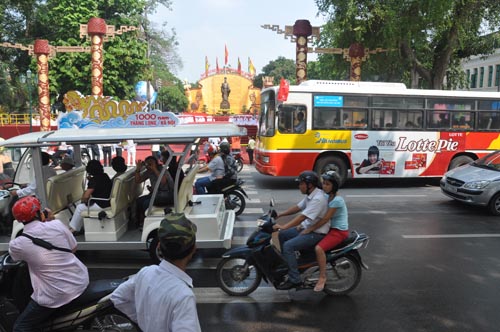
Hanoi celebrates 1,000 years as capital of Vietnam.